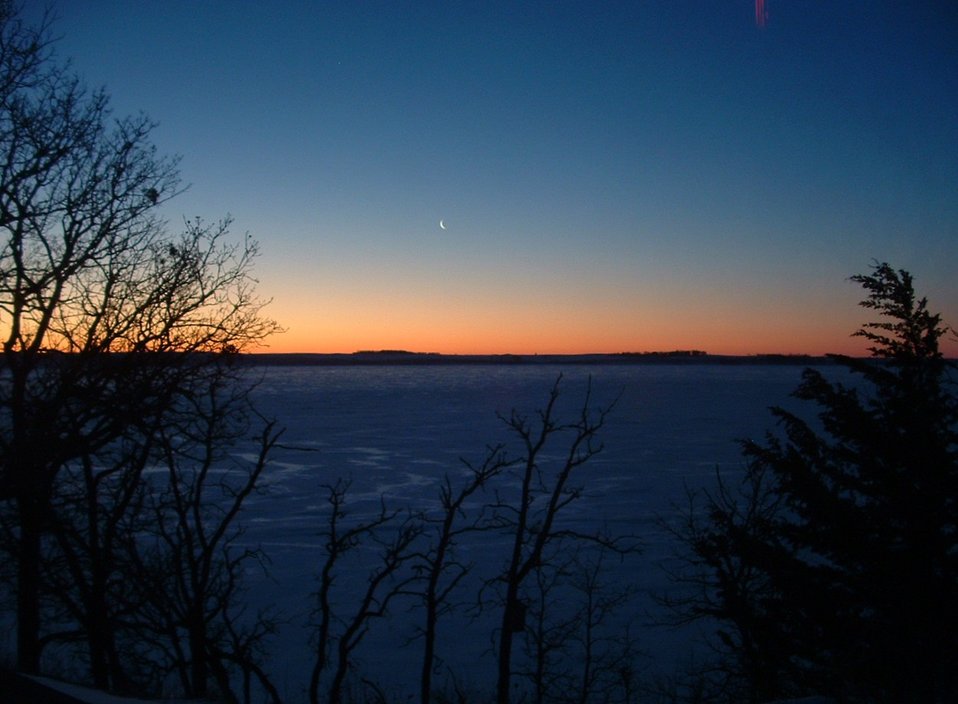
Sunrise with Moon

Sunrises can be dramatic or subtle at Waubay National Wildlife Refuge. A soft orange glow accompanies a sliver of moon this morning. This photo was taken from the Visitor Center.